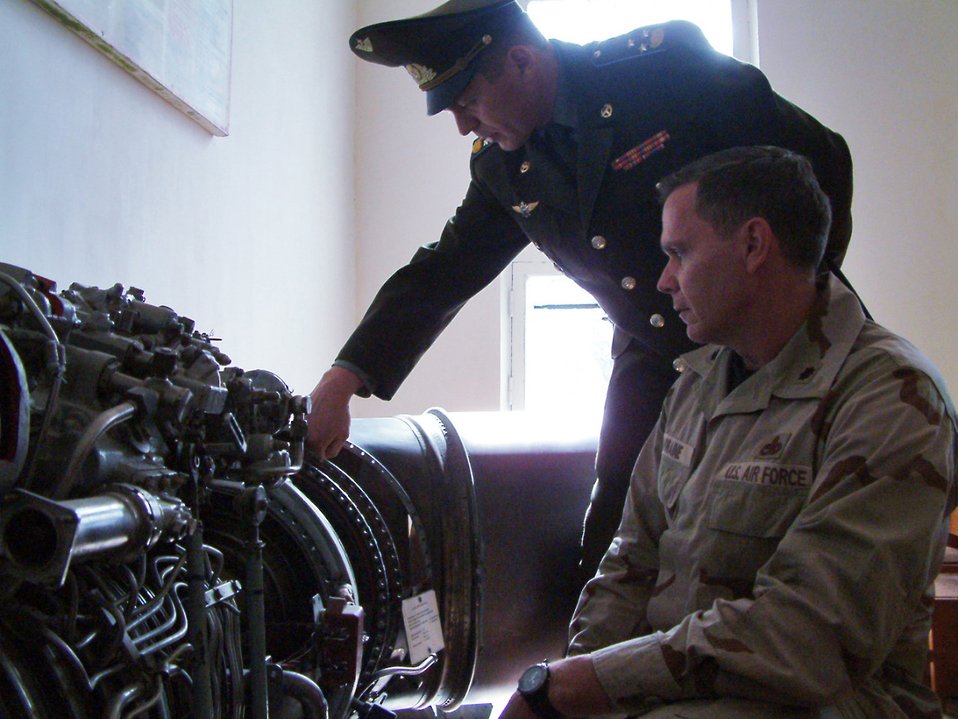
Tour marks milestone in Kyrgyzstan

Kyrgyz Air Force Col. Sergey Slomatov shows Lt. Col. Eric Lorraine the internal mechanics of a Soviet built MI-24 Hind helicopter engine in one of Frunze Air Base No. 1's classrooms. Colonel Lorraine is commander of the 376th Expeditionary Maintenance Group.